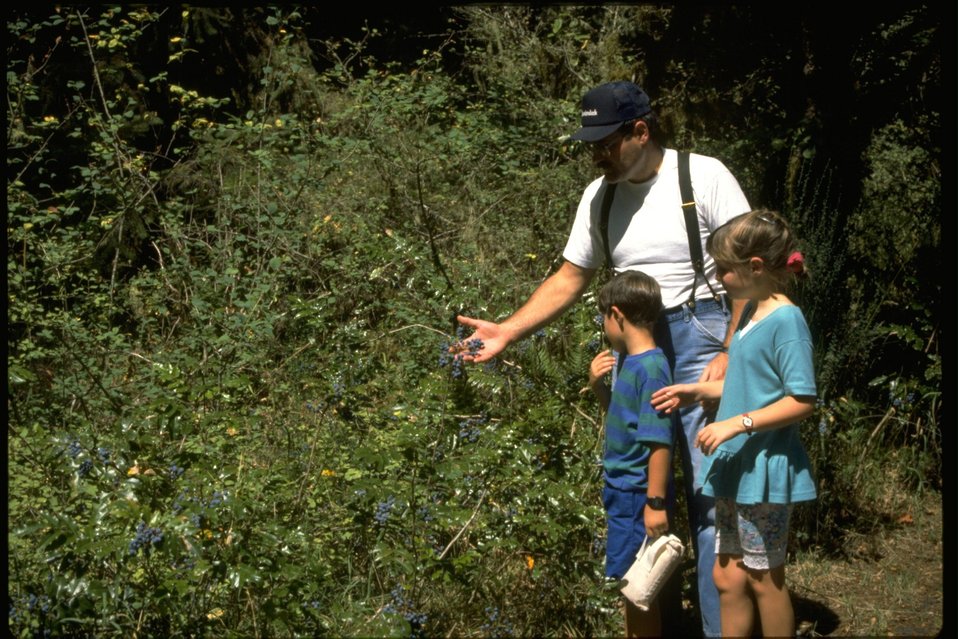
Special Forest Productions berry pick.